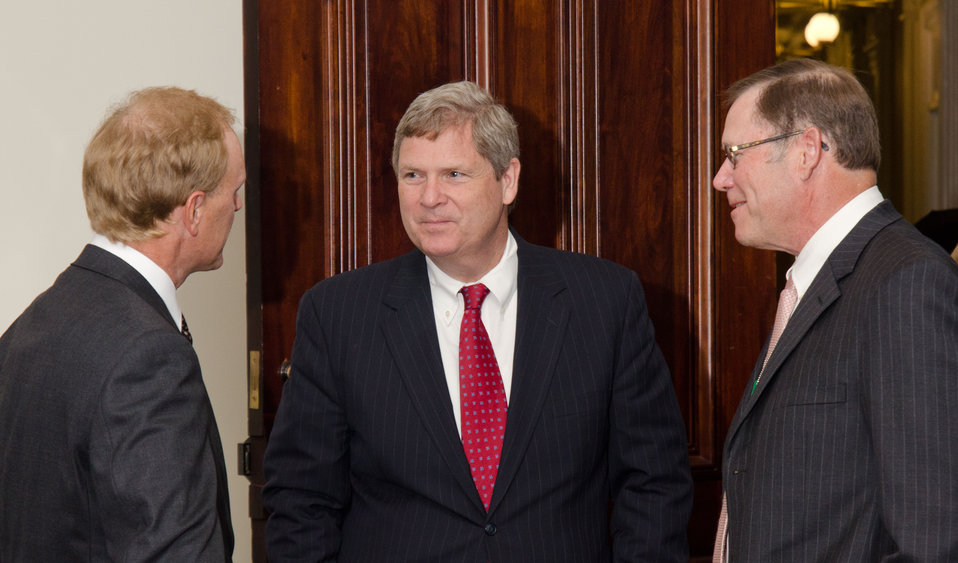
Mark Timm (left), Colby Creek Stables Owner in Saunders County, Texas, and Everett Dobrinski (right), CoBANK, North Dakota, spoke with Agriculture Secretary Tom Vilsack (center) at a meeting at a White House, in Washington, DC, on July 6, 2011. President Barack Obama, Agriculture Secretary Vilsack, and the President's Domestic Policy Adviser Melody Barnes along with rural communities leaders from across the country came together for the White House Rural Champions of Change event whose aim is to strengthen rural communities and promote economic growth. Prior to coming here, they were posed with a question about, what should/should not the government be doing to strengthen rural communities and promote economic growth.